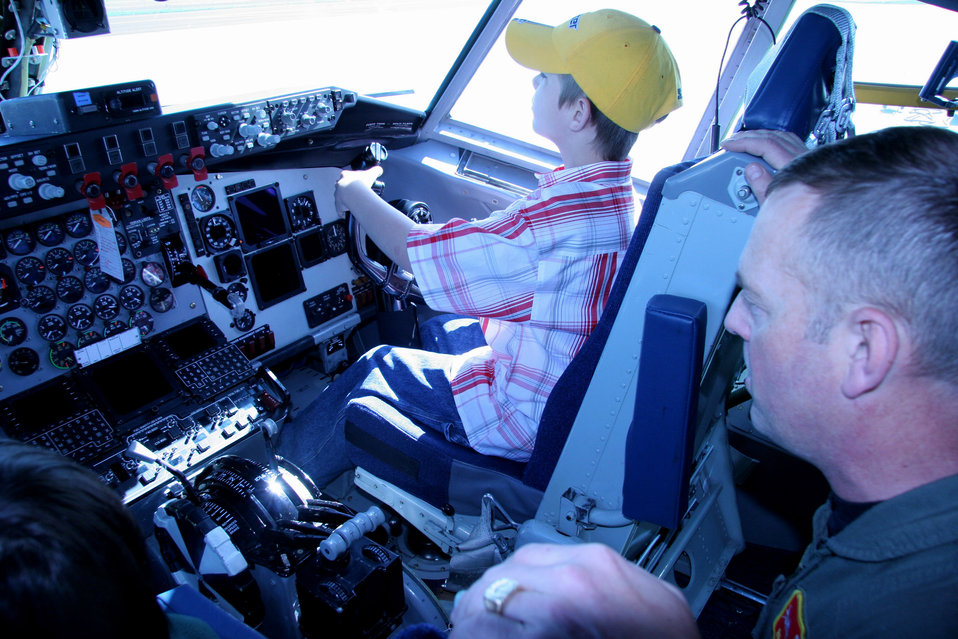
Take Our Daughters and Sons to Work Day

Lt. Col. Brian Calkins explains the instrument panel of a KC-135 Stratotanker to Cheis Hanzelic during Take Our Daughters and Sons to Work Day at the 939th Air Refueling Wing in Portland, Ore., on Thursday, April 27, 2006. Colonel Calkins is assigned to the 64th Air Refueling Wing.